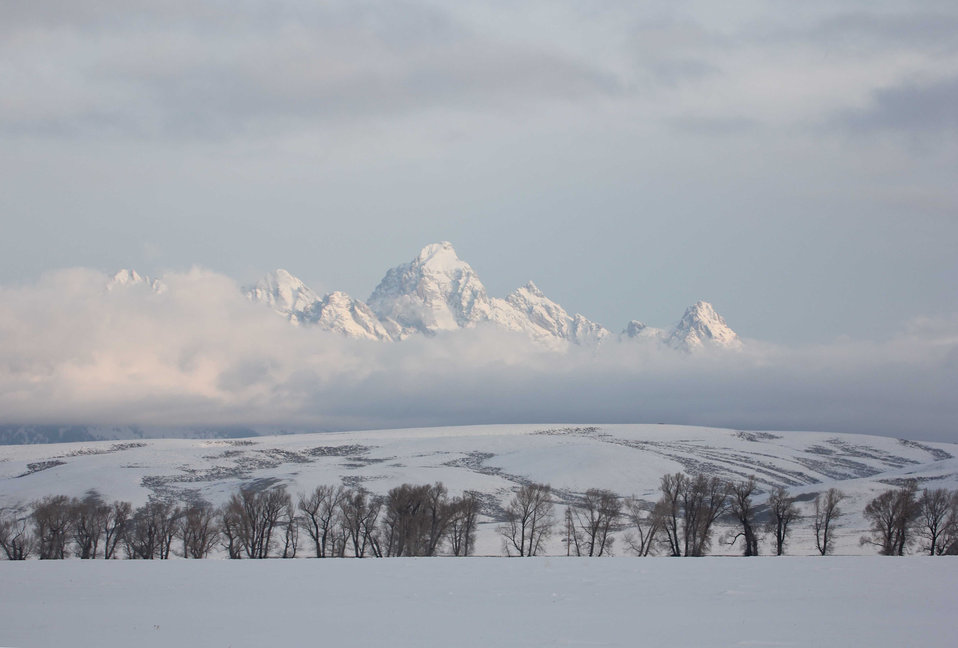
Teton Peaks

The peaks of the Teton Range rise above a layer of clouds to tower over the northern hills of the National Elk Refuge.

Credit: USFWS / Ann Hough, National Elk Refuge volunteer